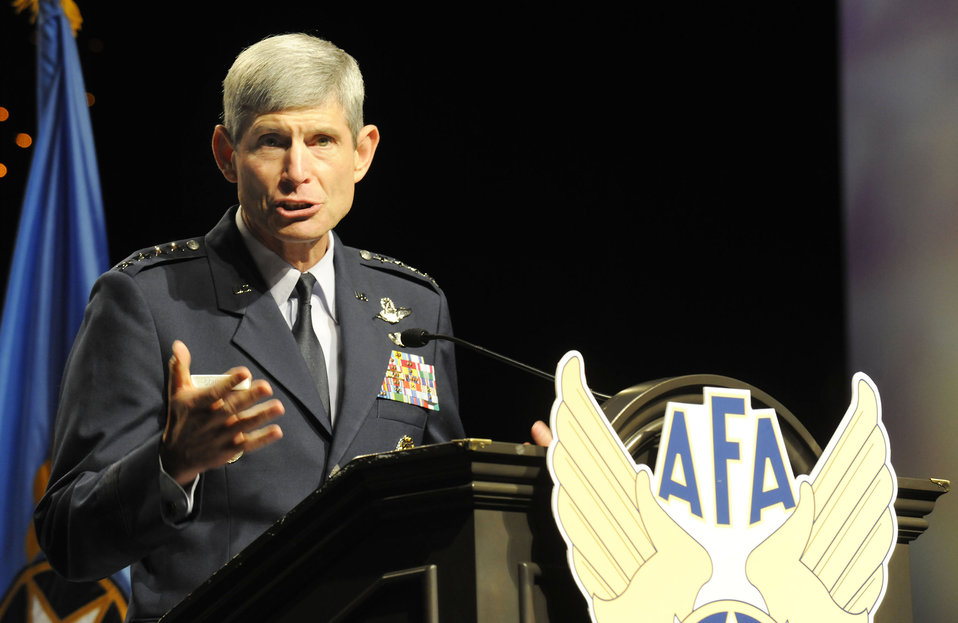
AFA Awards

Air Force Chief of Staff Gen. Norton Schwartz presents opening remarks at the 2009 Air Force Association Air & Space Conference and Technology Exposition Sept. 14, in Washington, D.C. During his address, General Schwartz thanked Airmen for their significant contributions to the service's joint and global missions.